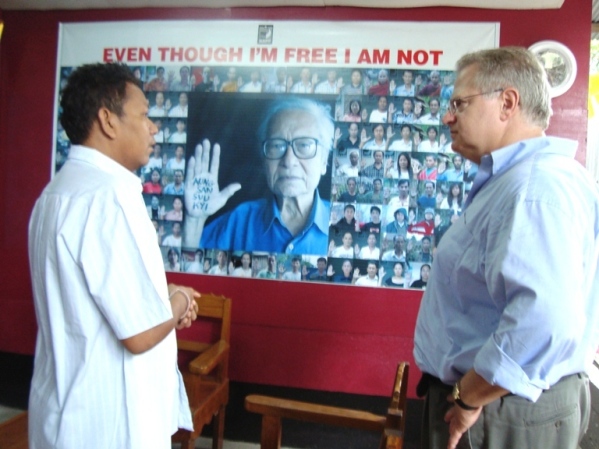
Assistant Secretary Schwartz Meets With Representatives from the Burmese Refugees

U.S. Assistant Secretary of State for Population, Refugees and Migration Eric Schwartz meets with representatives from the Burmese community to hear about their views on democracy, human rights and the situation in conflict zones in eastern Burma in Thailand in June 2010. Assistant Secretary for the Bureau of Population, Refugees, and Migration (PRM) Eric Schwartz visited Thailand and Laos in June to focus on the situation of Burmese ethnic minorities and Lao Hmong asylum seekers. Through PRM, the United States government provides financial assistance to the many organizations that are assisting these refugee populations in Thailand and Laos. Assistant Secretary Schwartz met with government officials and refugees themselves to see first-hand the challenges they face.